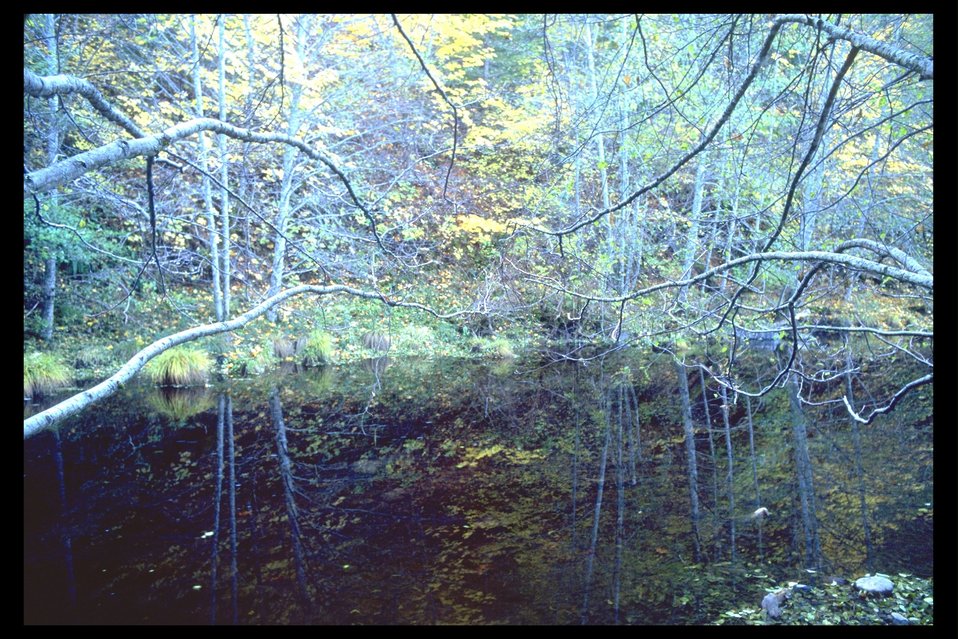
Elk Creek.